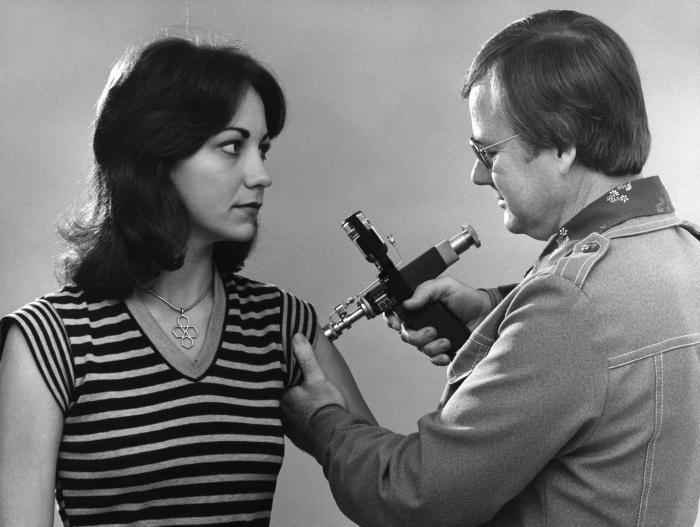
This 1976 photograph showed an adult female receiving a vaccination that was administered by a public health clinician, by way of a jet injector during the nationwide swine flu vaccination campaign, which began October 1, 1976.